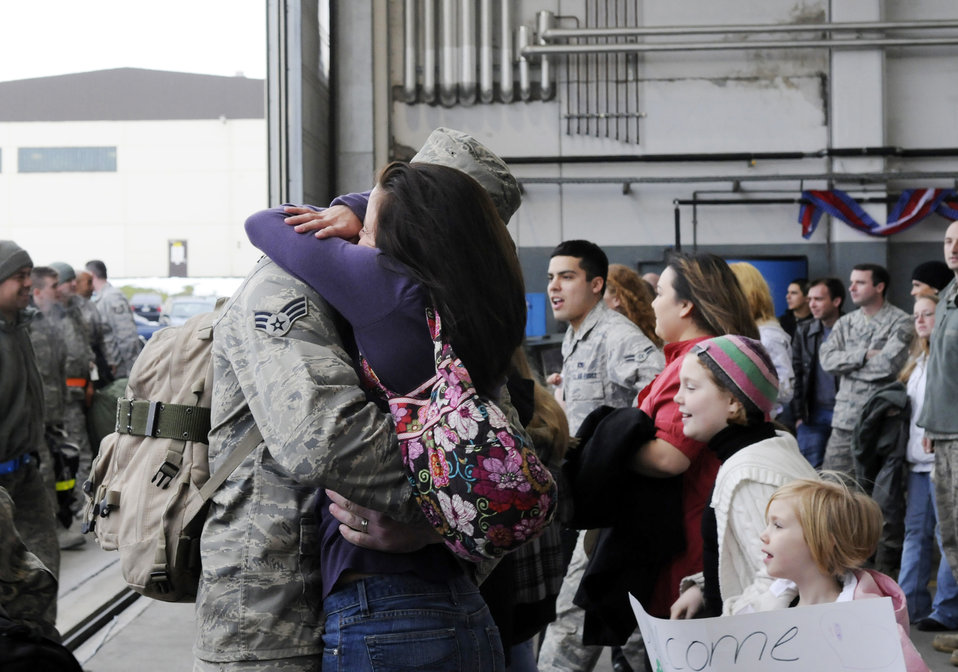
Spangdahlem team returns home

An Airman greets his wife as family members rush to find their loved ones during a celebration for those returning Feb. 5, 2010, from deployment to Joint Base Balad, Iraq, in support of Operation Iraqi Freedom.